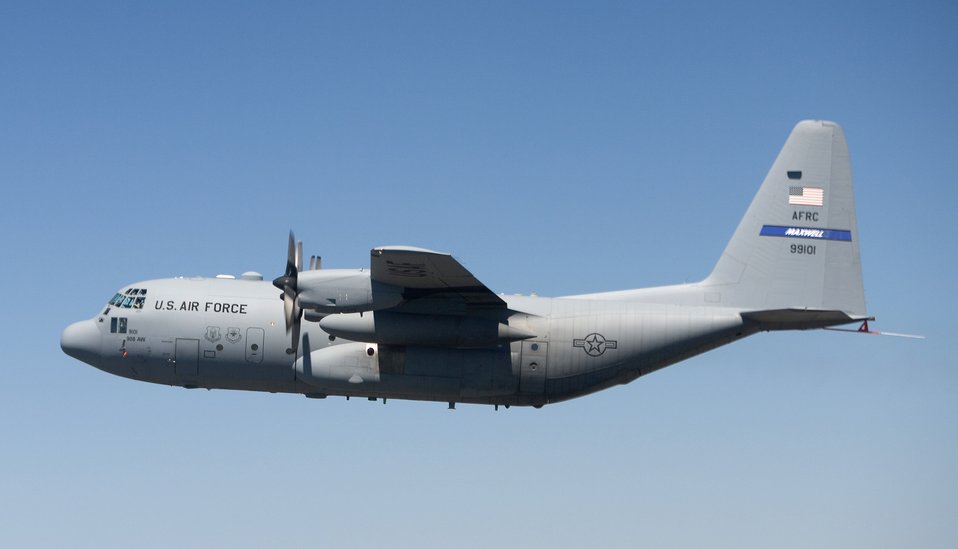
C-130 AMP flies for first time

A specially modified C-130 Hercules flies over the Texas countryside Sept. 19 during its initial test flight. The Hercules, which took off from Lackland Air Force Base, Texas, was modified under the C-130 Avionics Modernization Program which included a comprehensive upgrade of the avionics system that increases situational awareness for the warfighter tenfold over old analog cockpits, dramatically increasing information available to aircrews at a glance, simplifying tasks and decreasing workload.